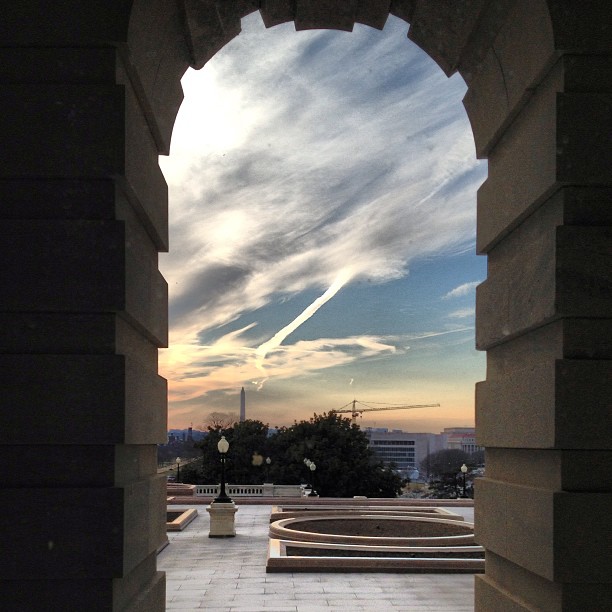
Sunset over the National Mall viewed from the Capitol.